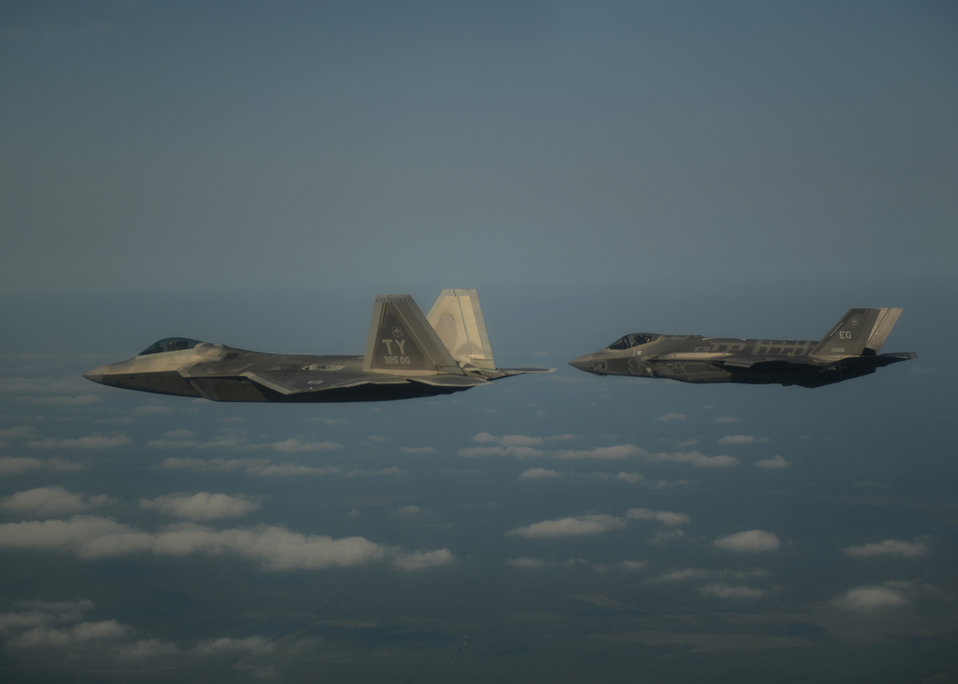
Fifth-generation formation

An F-22A Raptor, left, from the 43rd Fighter Squadron at Tyndall Air Force Base, Fla., and an F-35A Lightning II joint strike fighter from the 33rd Fighter Wing at Eglin Air Force Base, Fla., soar over the Emerald Coast Sept. 19, 2012. This was the first time the two fifth-generation fighters have flown together for the Air Force.